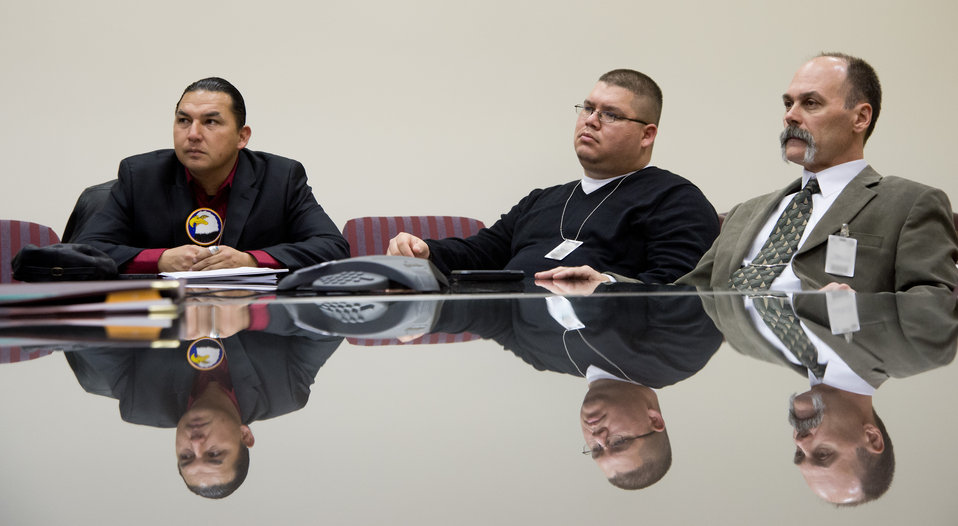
(L to R) Colville Tribe, WA Council member Ricky Gabriel, Stillaguamish Tribe, WA Council member Nick Smith, and Stillaguamish Tribe, WA Chairman Shawn Yanity listen to Agriculture Deputy Secretary Krysta Harden speak at a roundtable discussion to discuss Agriculture, Community and Economic Development Opportunities in Indian Country with tribal leaders at the U.S. Department of Agriculture (USDA) in Washington, D.C. on Tuesday, Nov. 12, 2013.